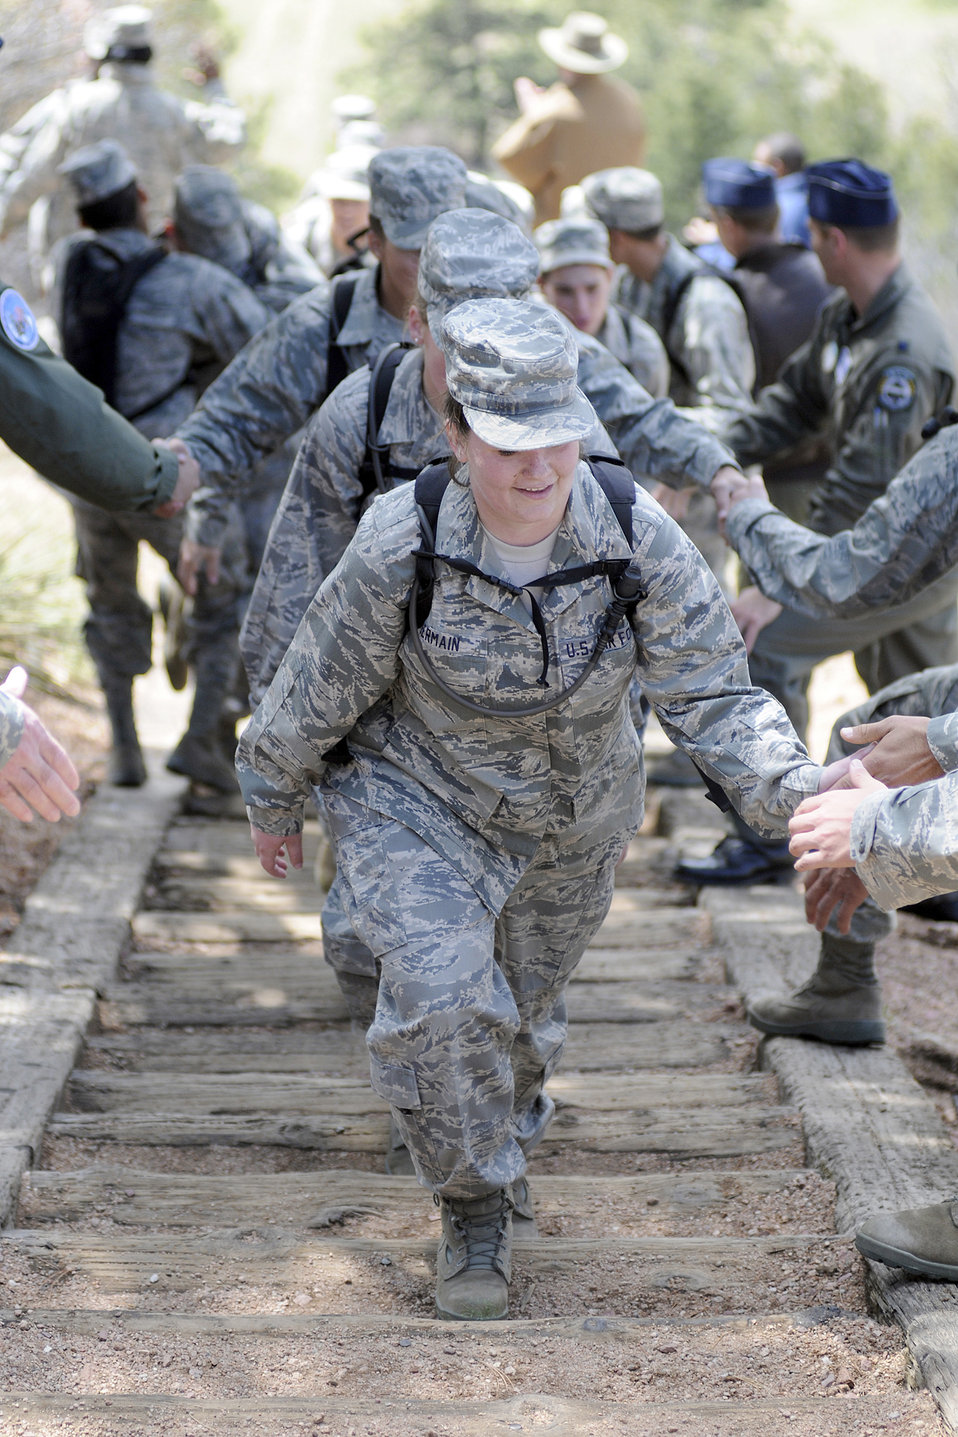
Cadet candidates graduate from Prep School

Cadet Candidate Julianne Germain ascends the